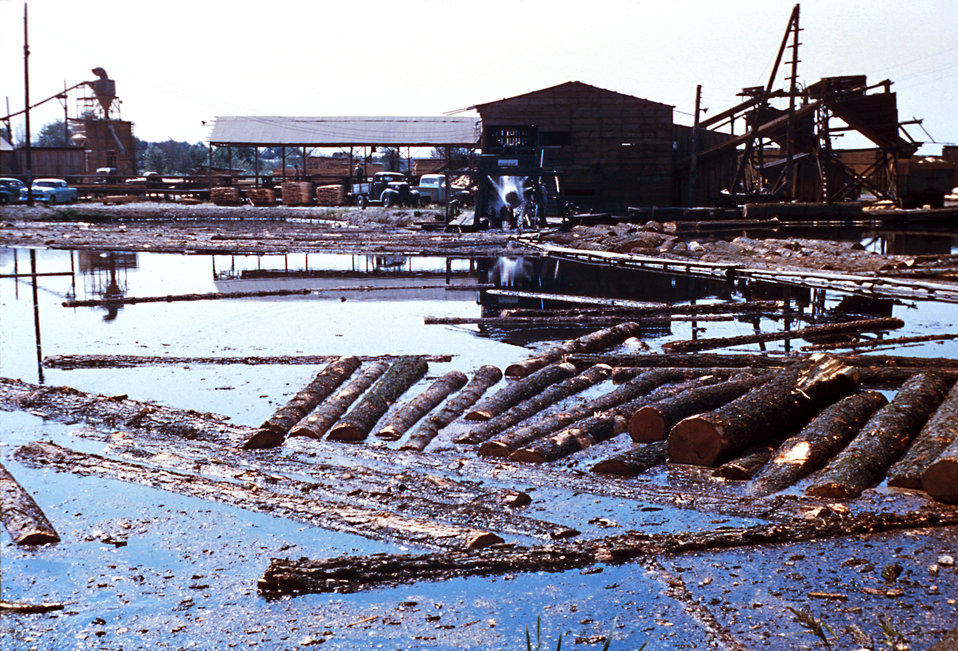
Here we find an Oregon log pod acting as a mosquito breeding place.